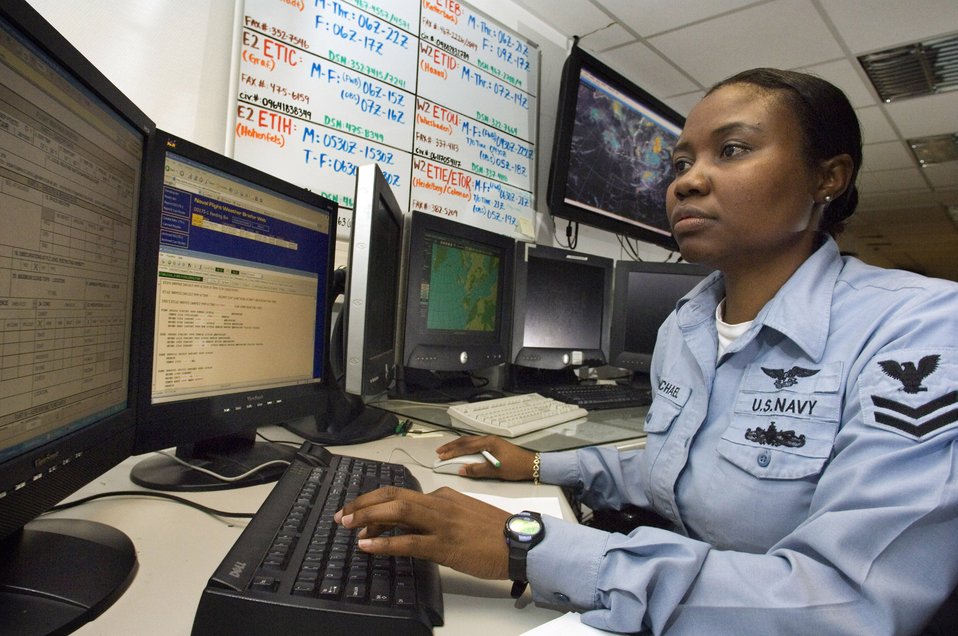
Air Force, Navy weather forecasters form one front

Aerographers Mate 2nd Class Evelyn Michael prepares weather briefs for aircrews throughout Europe from Sembach Air Base, Germany, Aug. 30. Petty Office Michael is one of the new Navy weather forecasters at Sembach's 20th Operational Weather Squadron.